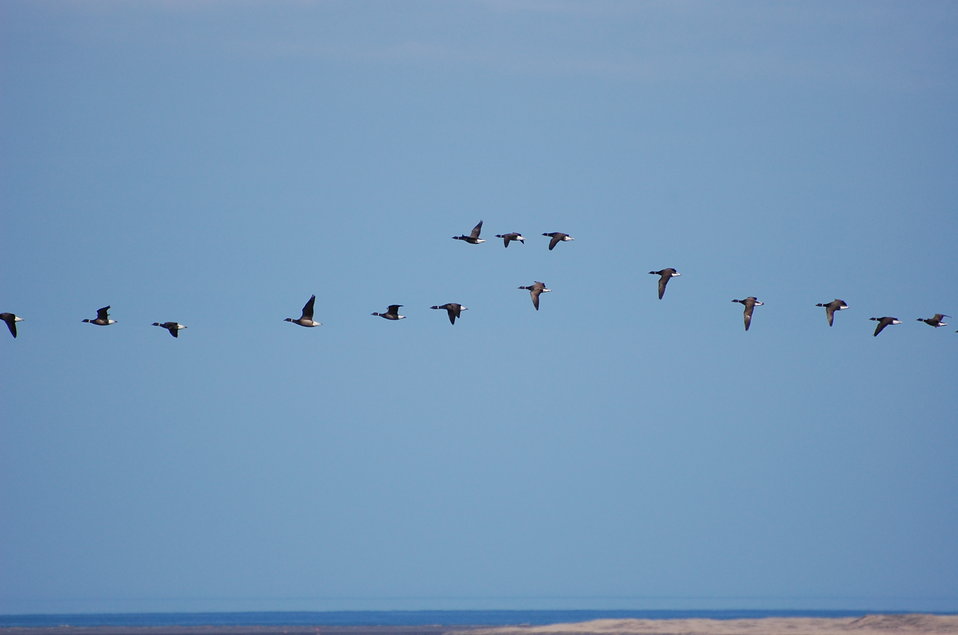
Brant at Izembek Lagoon

Izembek National Wildlife Refuge